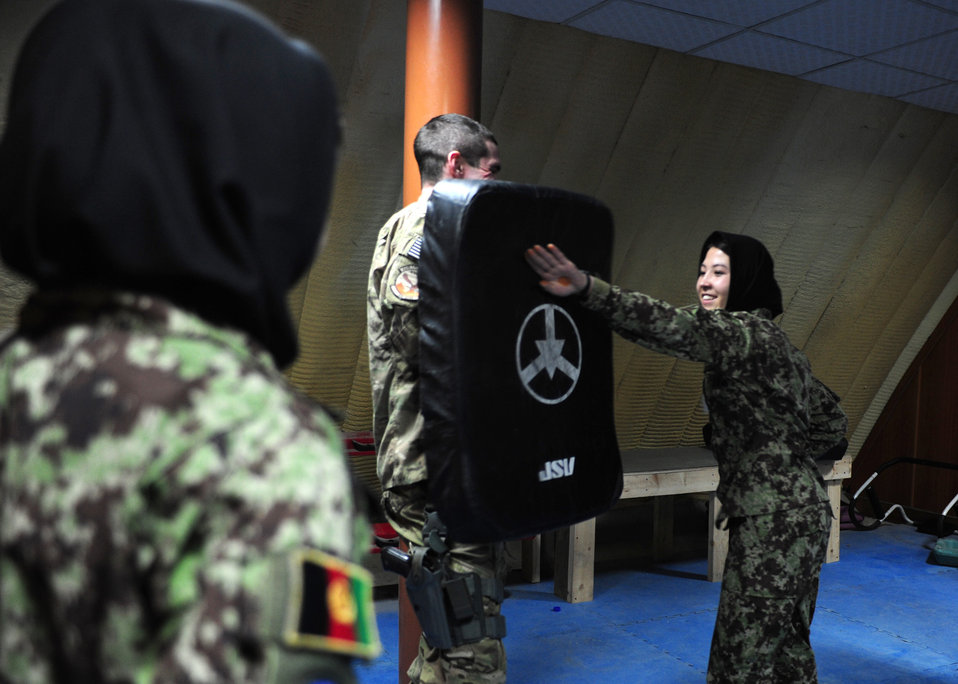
U.S. advisors teach self-defense to Afghan Air Force women

Afghan Air Force Lt. Nafisa Adeb performs a simulated neck strike on U.S. Air Force Capt. William Boland, a force support officer with the 439th Air Expeditionary Advisory Squadron, during a women's self-defense class at Kabul International Airport, Afghanistan, Feb. 29, 2012. The training was held to prepare the students physically and mentally for what they may experience if placed in a dangerous scenario.